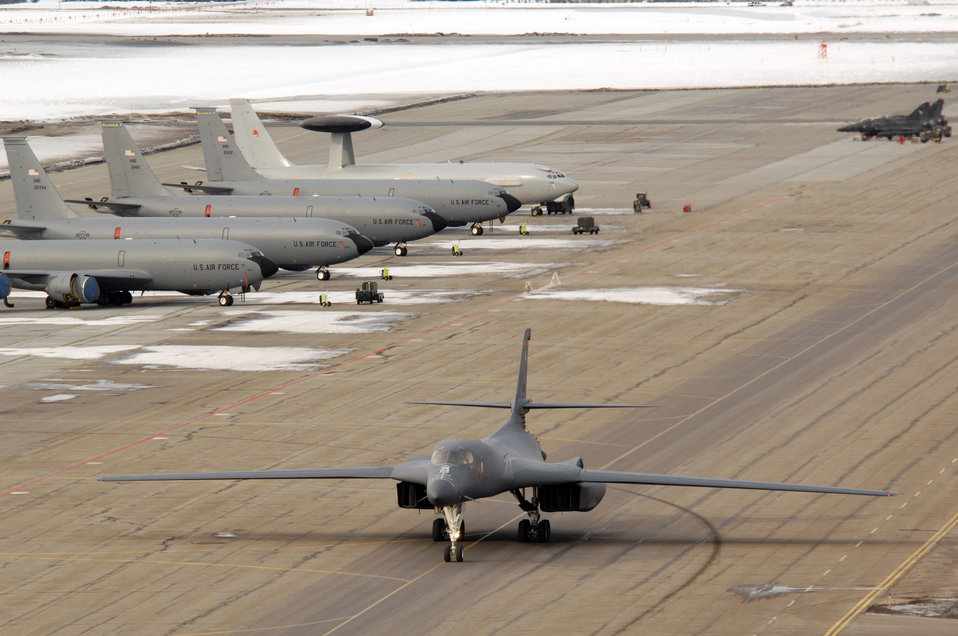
Ready to rumble

A B-1B Lancer arrives at Eielson Air Force Base, Alaska April 3 for Red Flag-Alaska 07-1. The B-1 is from Ellsworth AFB, S.D. Red Flag-Alaska provides joint offensive counter-air, interdiction, close air support, and large force employment training in a simulated combat environment.